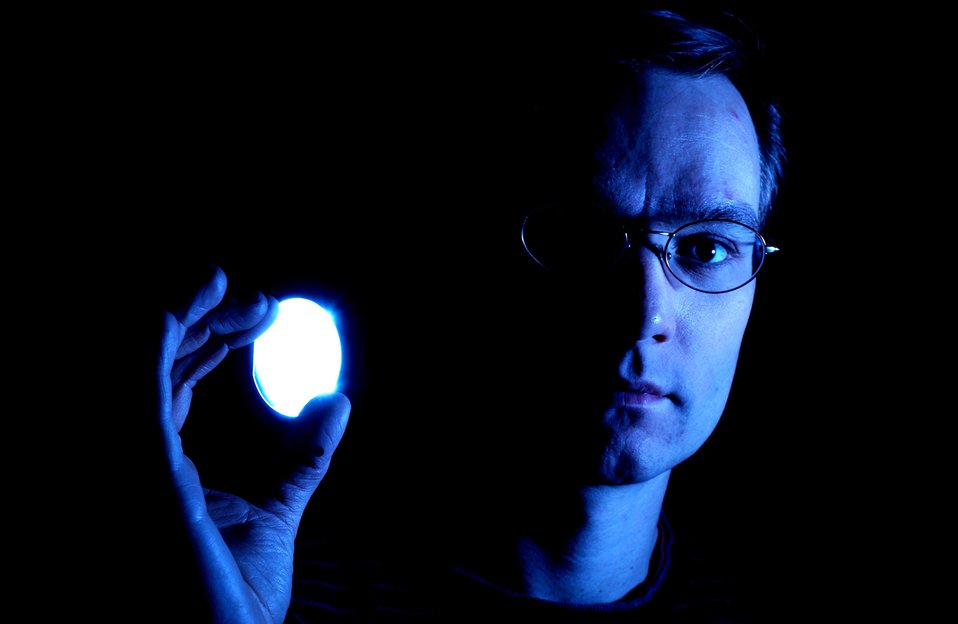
RESEARCHING SOLID-STATE LIGHTING AT SANDIA NATIONAL LABORATORIES.

SOLID STATE LIGHTING REFERS TO THE USE OF LIGHT EMITTING DIODES (LEDS) FOR ILLUMINATION. LED LIGHTING IS AS MUCH AS 10 TIMES AS EFFICIENT AS INCANDESCENT AND TWICE AS EFFICIENT AS FLUORESCENT LAMP TECHNOLOGIES, WHILE OFFERING GREATER VERSATILITY AND LONGER LIFETIME. SANDIA IS A LEADER IN A NATIONWIDE RESEARCH INITIATIVE TO DEVELOP COMMERCIALLY VIABLE LED-BASED TECHNOLOGY FOR NEXT GENERATION LIGHTING.